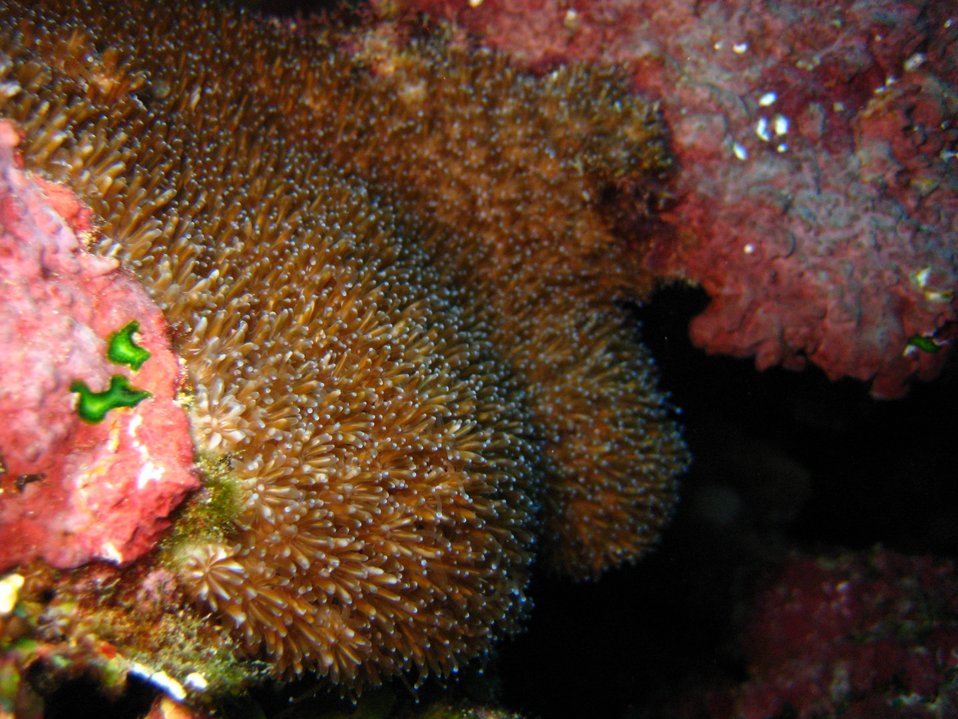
Extended coral polyps feeding